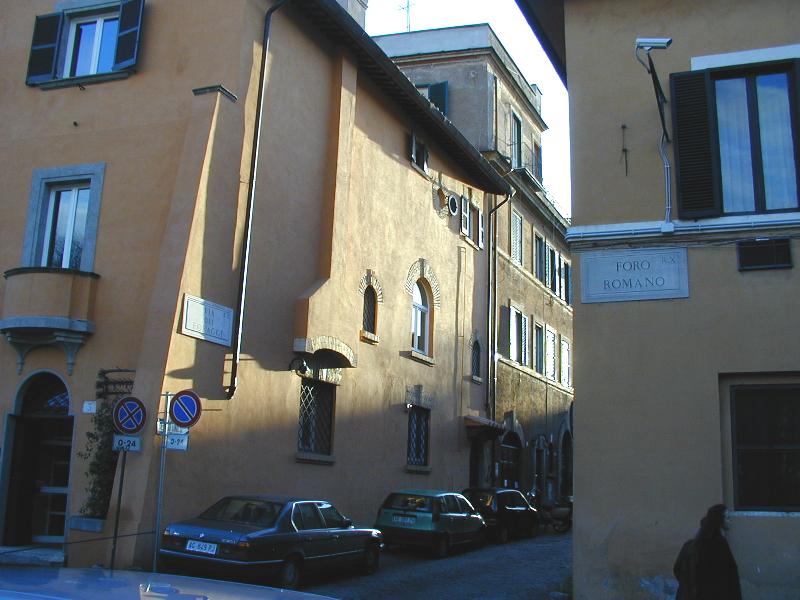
001229 10 foro romano